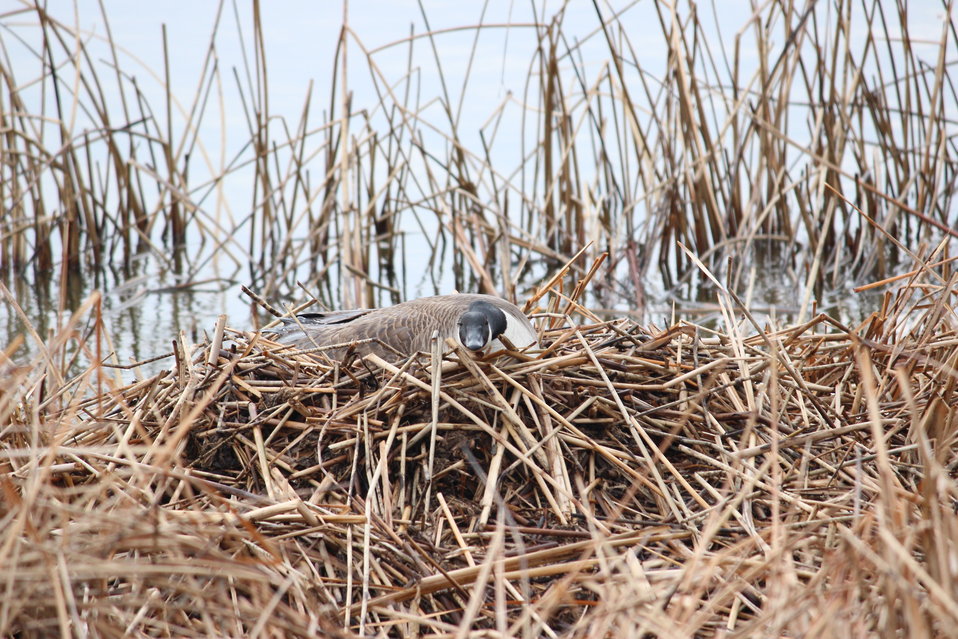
Incubating Canada Goose

Canada geese stay mated, usually for life. While the female sits on the nest incubating the eggs, the male stays nearby or hides himself to avoid bringing attention to his mate. The female also lays low to avoid detection. Muskrat huts are common nesting platforms for geese in North Dakota.